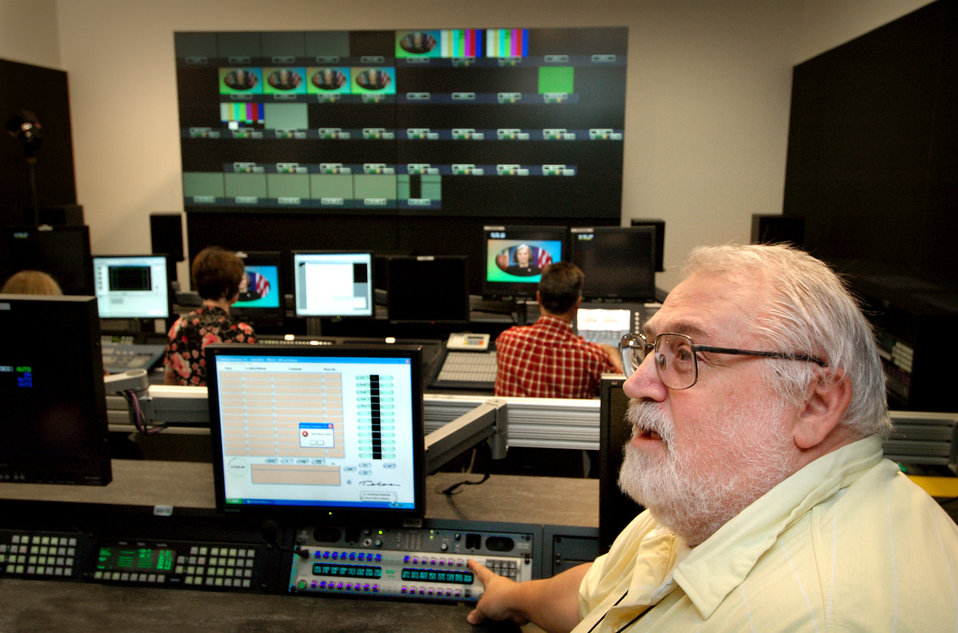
This photograph shows Centers for Disease Control's television broadcast Editor/Director, Ron Bartlett, as he was working in one of the broadcast edit suites located in the organization's Global Communications Center, otherwise known as Building 19.